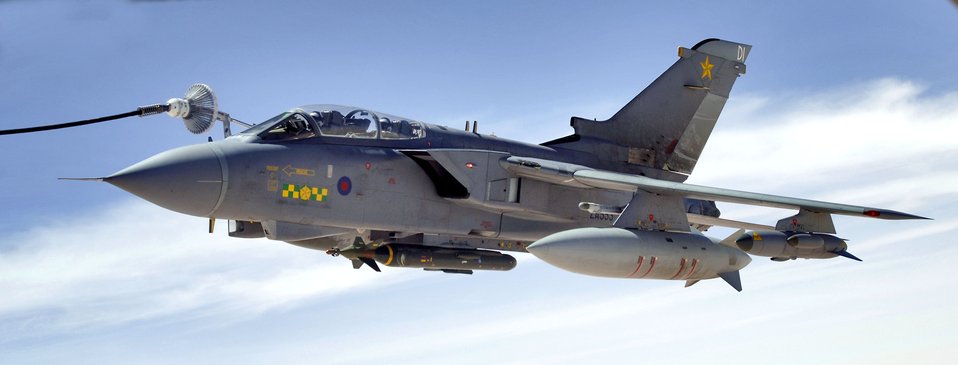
Tornado power

An RAF Tornado GR-4 takes on fuel from a KC-135 Stratotanker on Sunday, May 14, 2006. The Tornado and crew are from the 617th Squadron at RAF Lossiemouth, Scotland. The KC-135 and crew are deployed to the 340th Expeditionary Air Refueling Squadron from the 905th Air Refueling Squadron at Grand Forks Air Force Base, N.D.